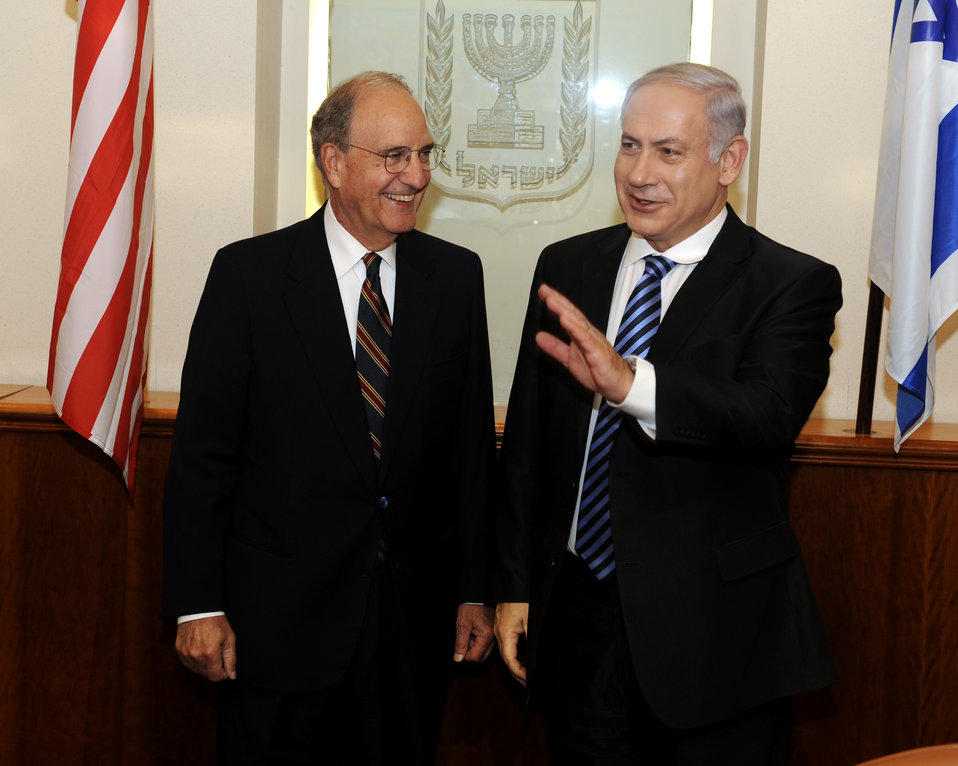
Israeli Prime Minister Netanyahu and Special Envoy Mitchell Pose for a Photo

Israeli Prime Minister Benjamin Netanyahu and U.S. Special Envoy for Middle East Peace George Mitchell pose for a photo at the Prime Minister's office in Jerusalem on July 18, 2010.